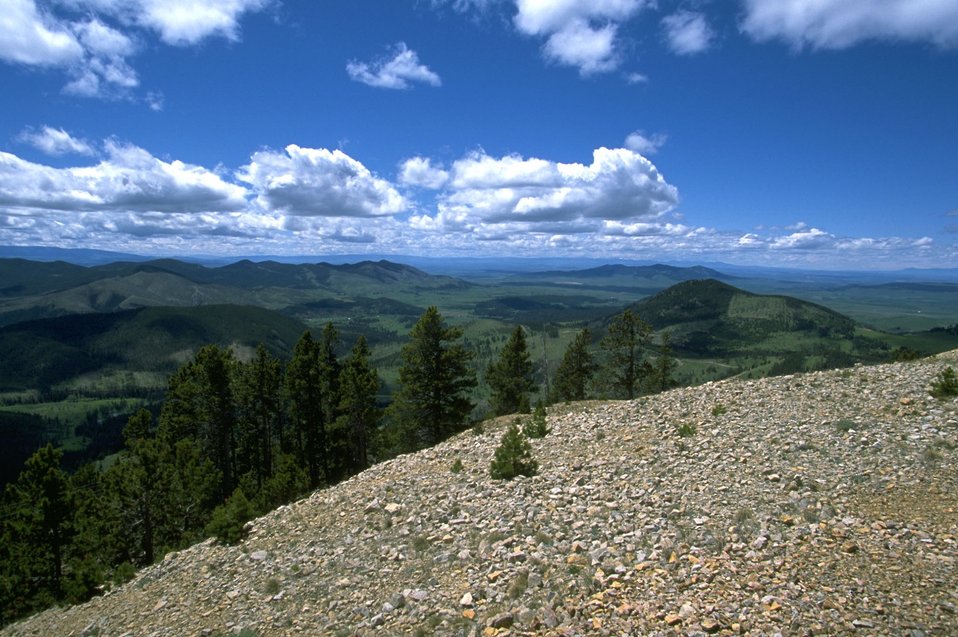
Looking down on a valley in the Judith Mountains